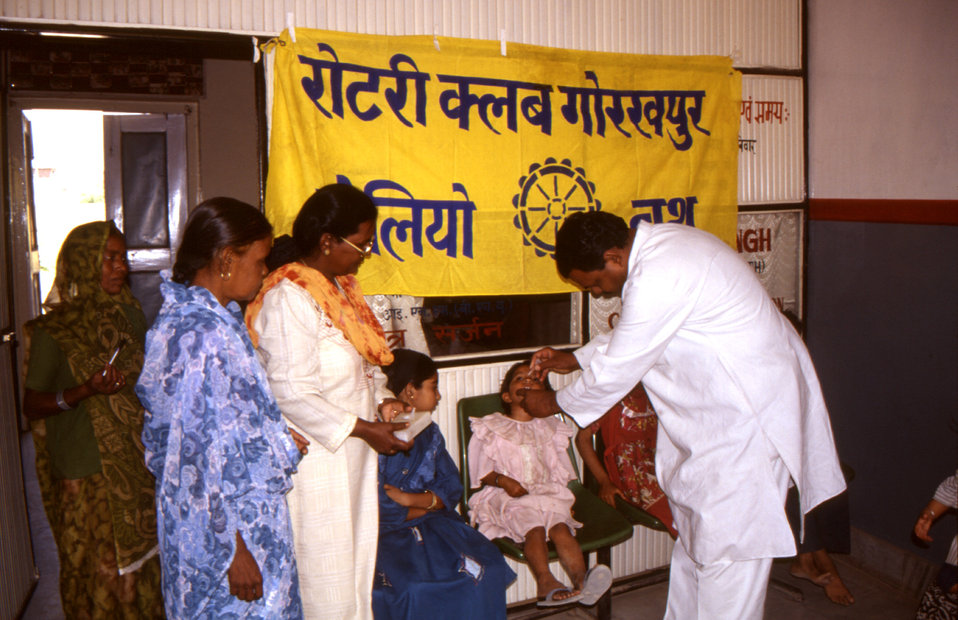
Through its PolioPlus program, the Rotary International organization is a key STOP Transmission of Polio (STOP) immunization initiative partner, in the global effort to eradicate polio. This 2000 photograph depicted a healthcare worker administering a polio vaccine to an Indian child.There are two kinds of polio vaccine: IPV, which is the shot recommended in the United States today, and a live, oral polio vaccine (OPV), which is drops that are swallowed.Until recently OPV was recommended for most children in the United States.Both vaccines give immunity to polio, but OPV is better at keeping the disease from spreading to other people. However, for a few people (about one in 2.4 million), OPV actually causes polio. Since the risk of getting polio in the United States is now extremely low, experts believe that using oral polio vaccine is no longer worth the slight risk, except in limited circumstances which your doctor can describe. The polio shot (IPV) does not cause polio.